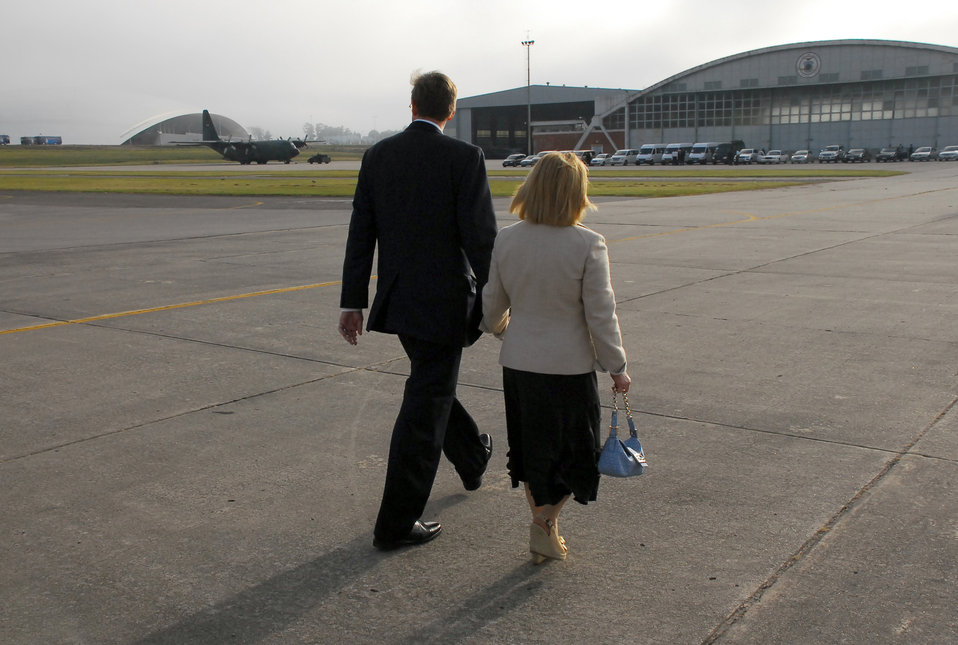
Secretary Clinton Arrives in Montevideo, Uruguay

U.S. Ambassador to Uruguay David Nelson and his wife Gloria await U.S. Secretary of State Hillary Rodham Clinton's arrival at Carrasco International Airport in in Montevideo, Uruguay March 1, 2010.